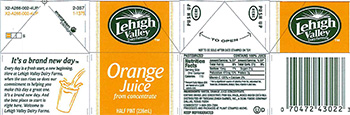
RECALLED – Orange Juice

March 3, 2014 – Product Recall – Lehigh Valley Dairy Conducts Voluntary Recall of Lehigh Valley, Swiss Premium, and Price Chopper Brand Orange Juice Because It May Contain Undeclared Allergen (Milk).